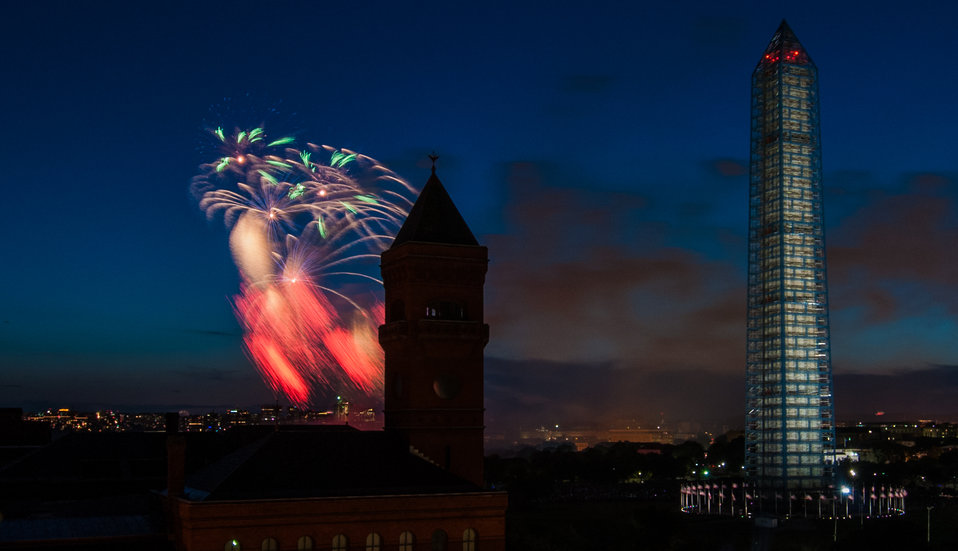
4th of July fireworks as seen from the U.S. Department of Agriculture (USDA) headquarters building, with the USDA Forest Service Yates Building in the foreground, left, and the Washington Monument in Washington, D.C., on July 4, 2013.